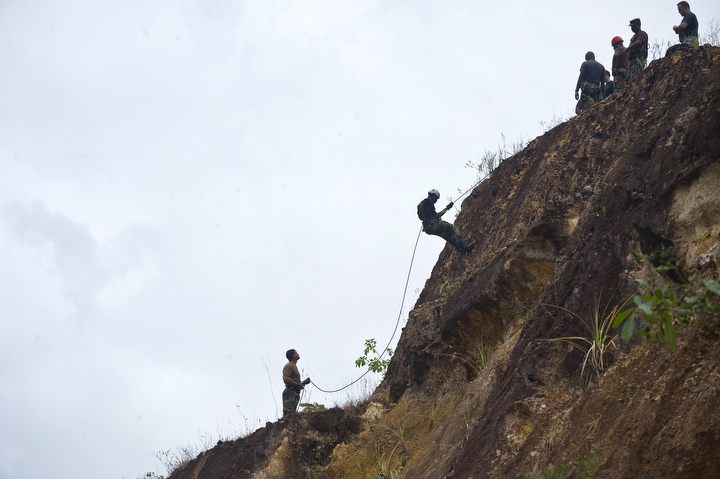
St. Lucia police team with Airmen during Operation Southern Partner

Members of the Operation Southern Partner Guardian Angel team teach basic mountaineering skills for high angle rope rescue to the Royal St. Lucia police force's special service unit June 1 during a subject matter expert exchange at La Toc, St. Lucia.